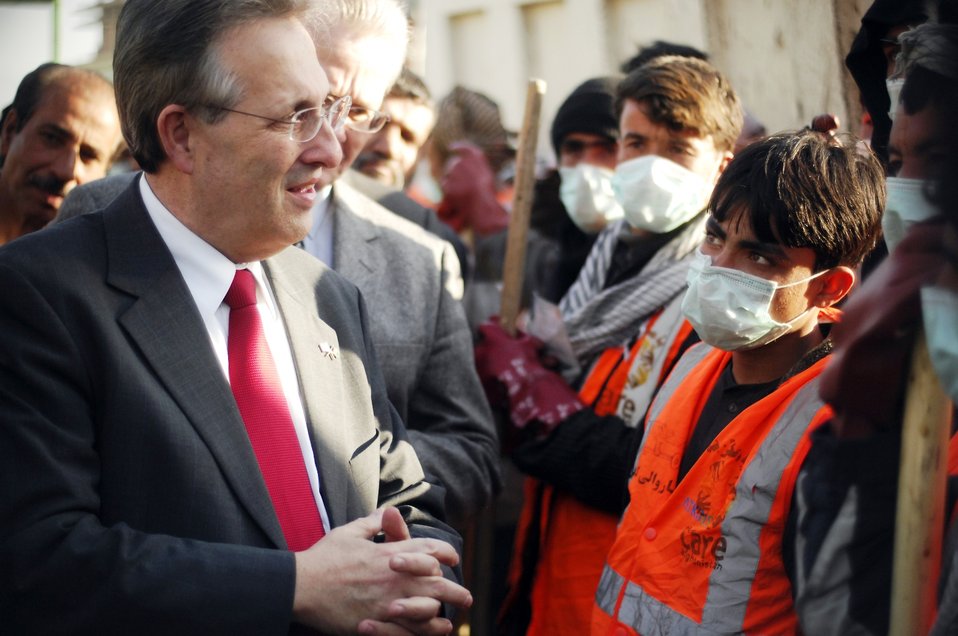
Care05